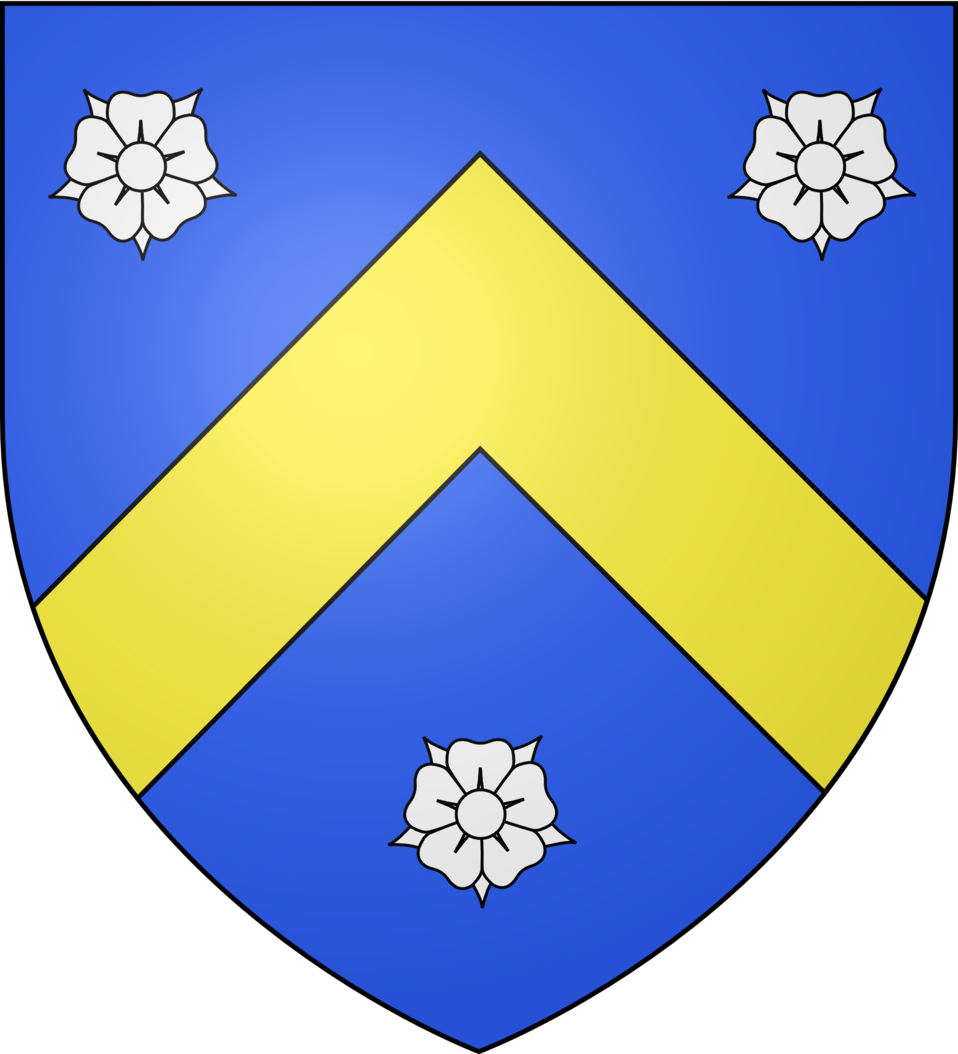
D'azur au chevron d'or accompagné de trois roses d'argent.